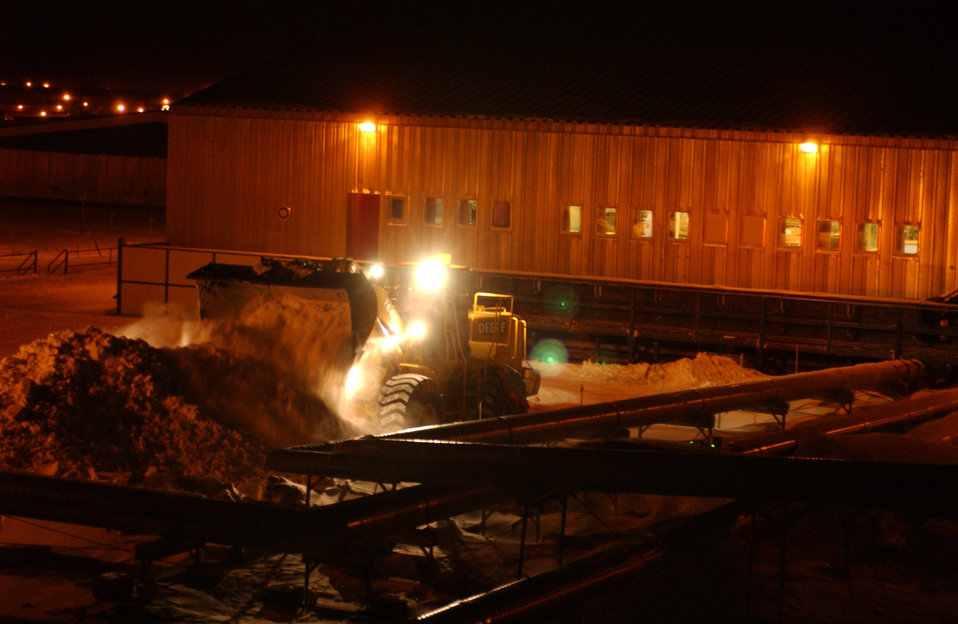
Life at Thule

Following a snowstorm that included wind gusts in excess of 90 mph, snow is removed near the dinning facility Jan. 25 at Thule Air Base, Greenland. Airmen serve a one-year remote, unaccompanied tour here in a multinational environment here.